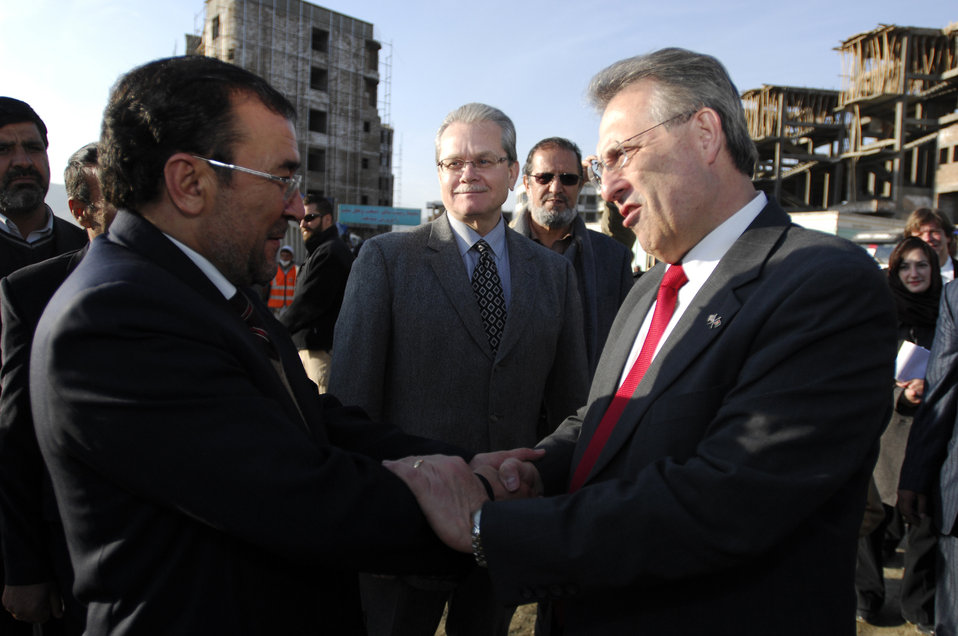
Care46